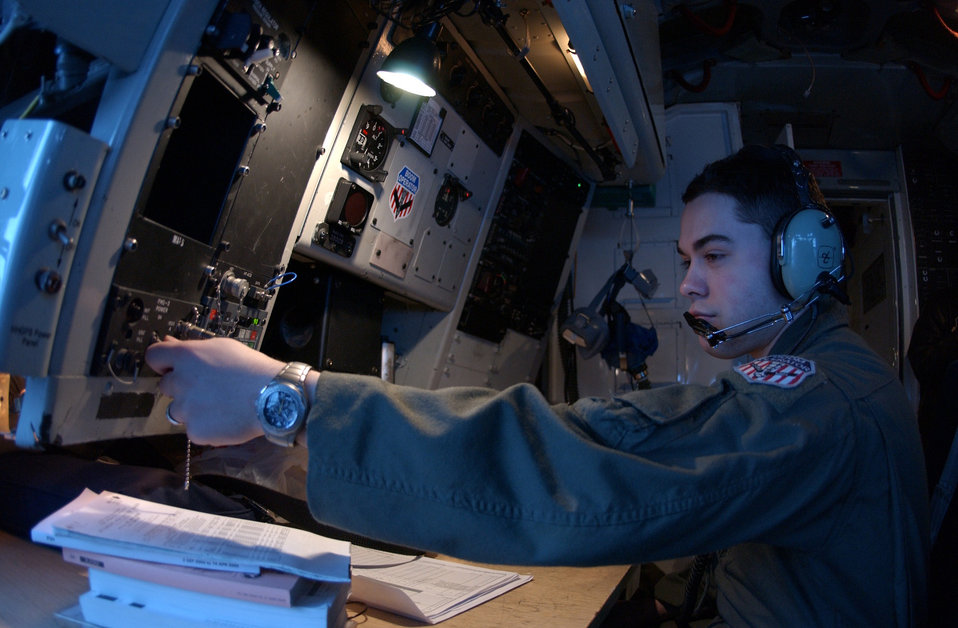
Arctic refuel

EIELSON AIR FORCE BASE, Alaska -- Senior Airman Brian Binkley completes an equipment function check before a refueling mission here Feb. 10. Airman Binkley is a KC-135 Stratotanker boom operator assigned to the Alaska Air National Guard's 168th Air Refueling Wing, the only Arctic-region refueling unit for Pacific Air Forces.